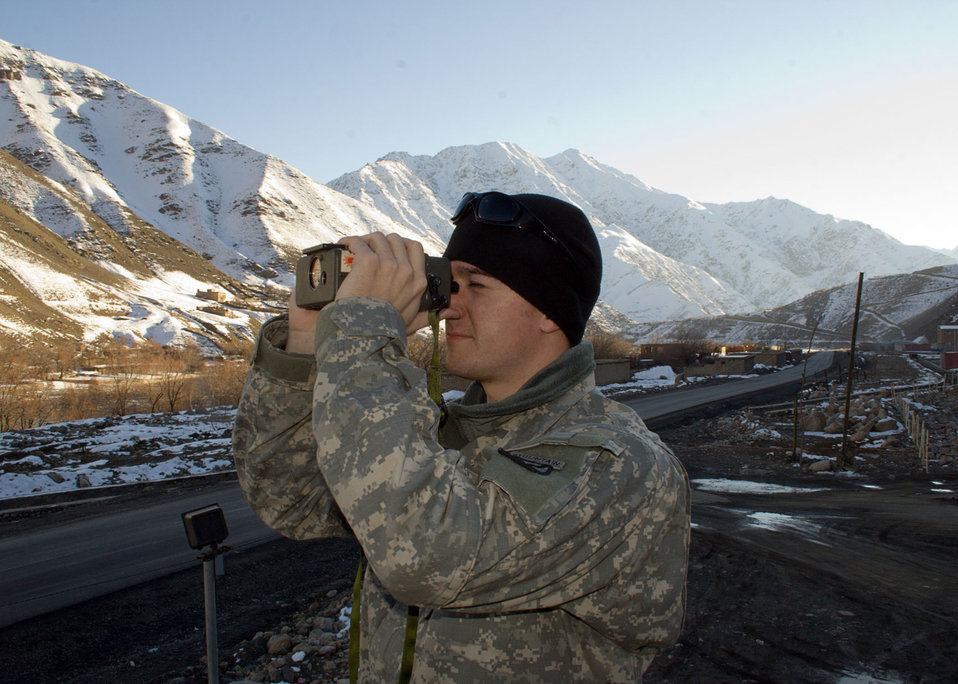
Weather technician trains observers at Afghan outpost

Senior Airman Nathan Fried uses a laser range finder to gather data for visibility charts Jan. 4 in the Panjshir Province in Afghanistan. He spent two days in early January training members of the Panjshir Provincial Reconstruction Team to take weather observations to help make aviation-support and convoy-operations decisions in the Panjshir Province. Airman Fried is assigned to the 20th Expeditionary Air Support and Operations Squadron at Bagram Air Base, Afghanistan.